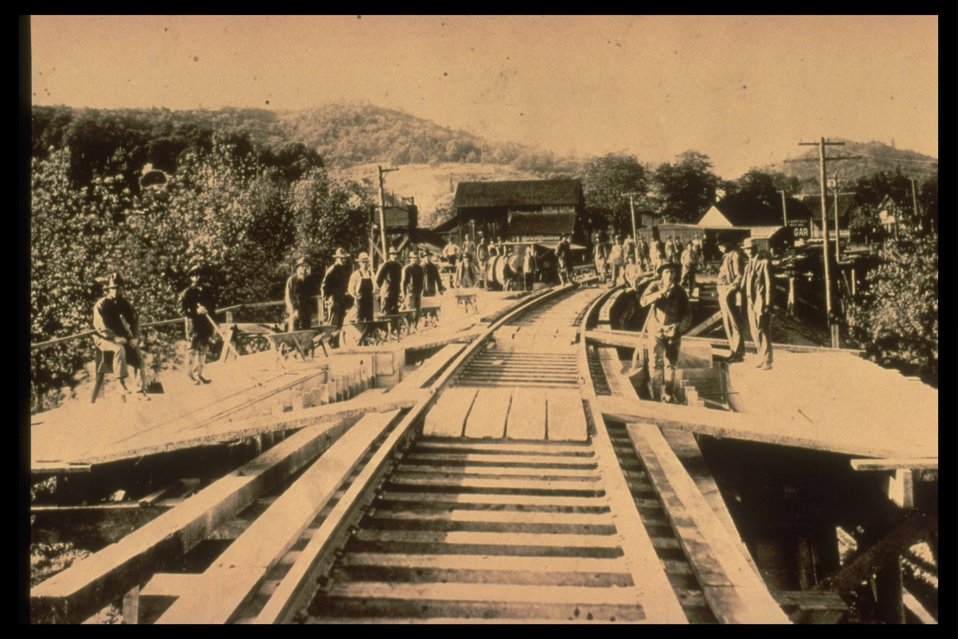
Black and white photo of rail workers on a railroad track working/posing.